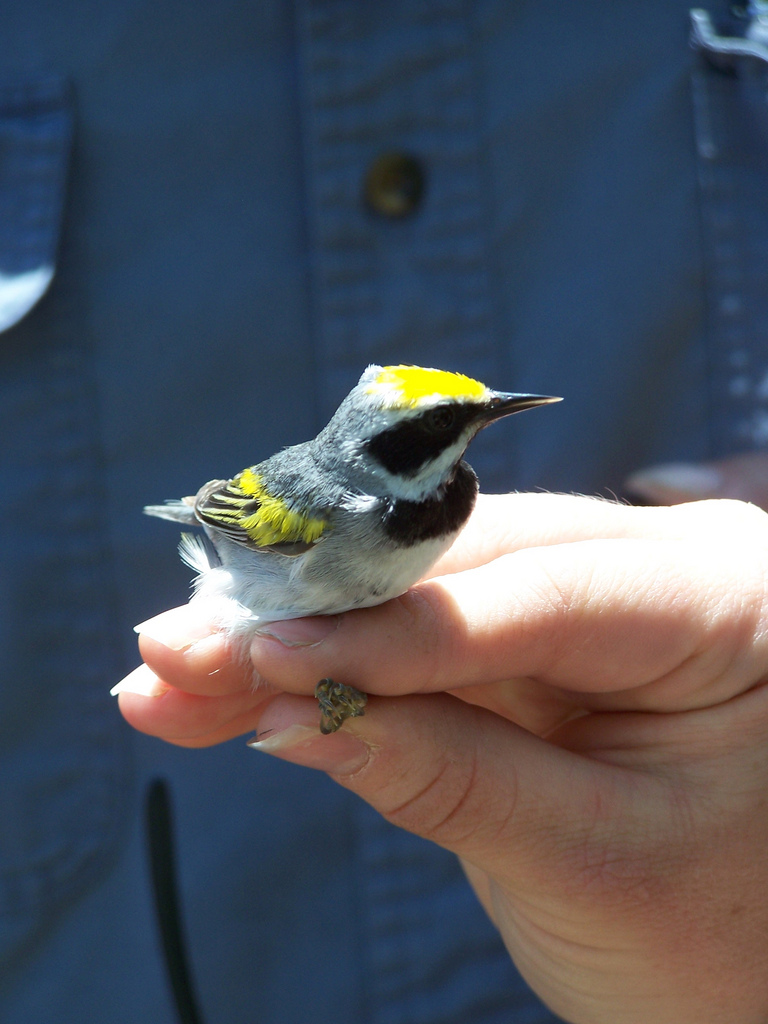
Rice Lake National Wildlife Refuge, MN

A golden-winged warbler research team member with a bird in hand.